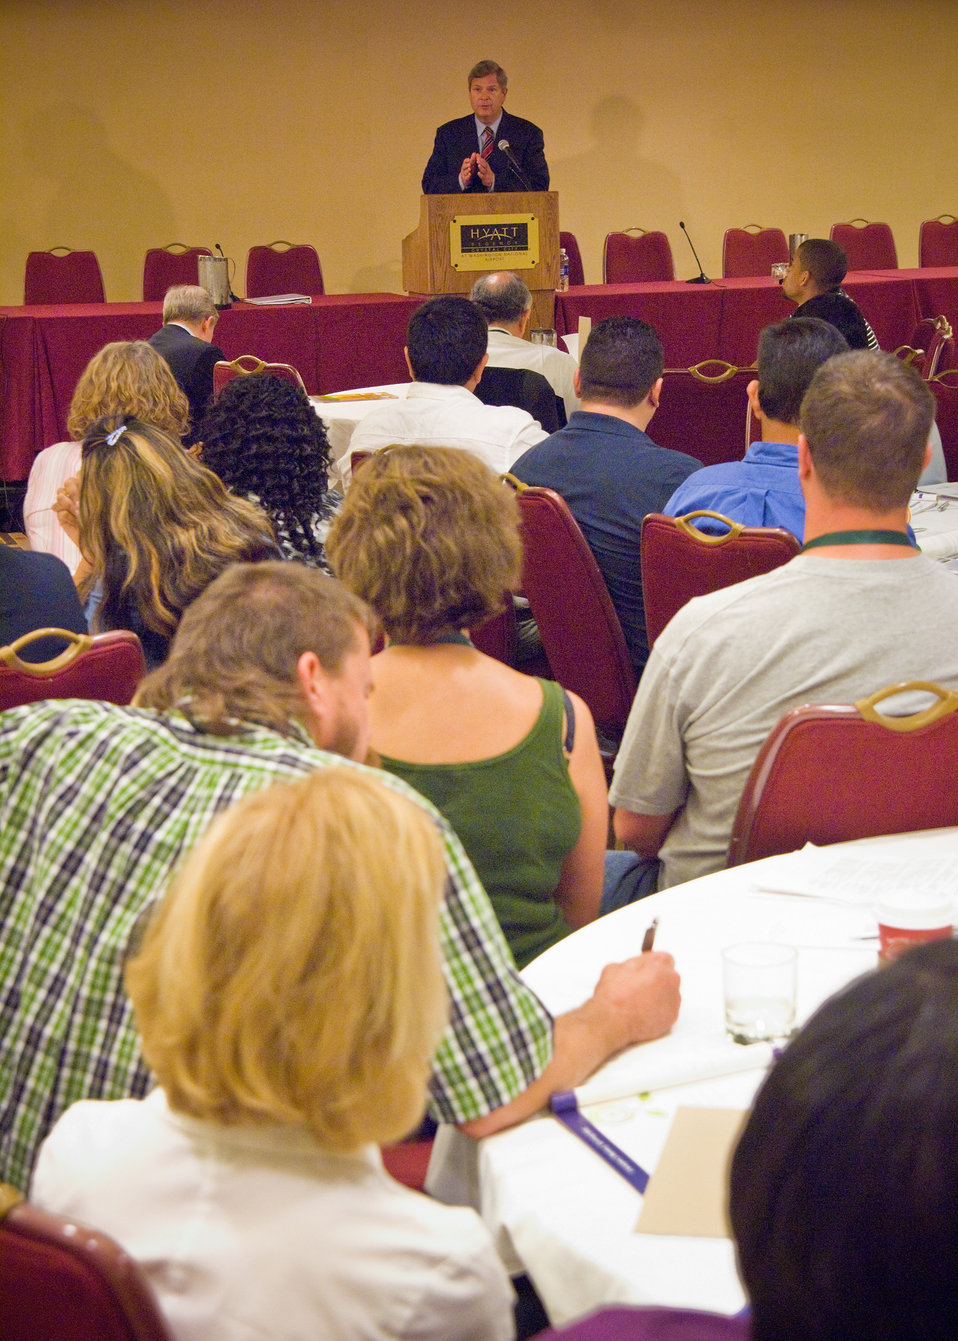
Agriculture Secretary Tom Vilsack speaks to Food Safety Inspection Service employees at the 2010 FSIS Diversity Training Conference in Arlington, Virginia, Tuesday, August 31, 2010. The theme of the conference is 'Diversity in Thought, Unity in Purpose.' The reason for the conference is to improve civil rights for clients and employees. USDA Photo 10di1475-23 by Bob Nichols.